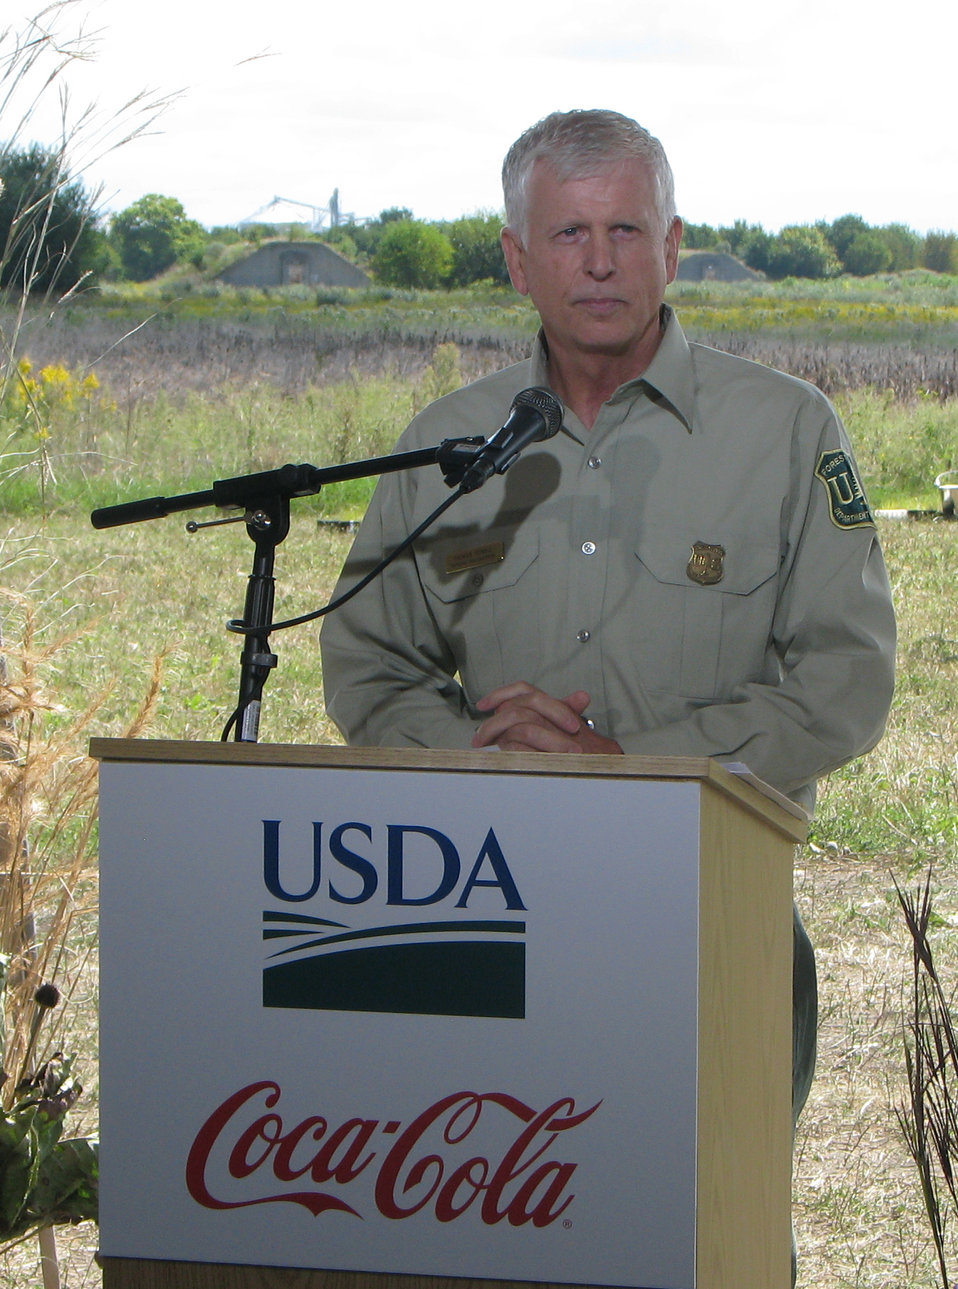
U.S. Forest Service Chief Tom Tidwell speaks at a public-private partnership event announcing a project to restore and protect damaged watersheds on national lands at the Midewin Tallgrass Prairie in Illinois on Friday, Sep. 13, 2013. The goal of this partnership is to return more than a billion liters of water to the National Forest System that provides drinking water to more than 60 million Americans.